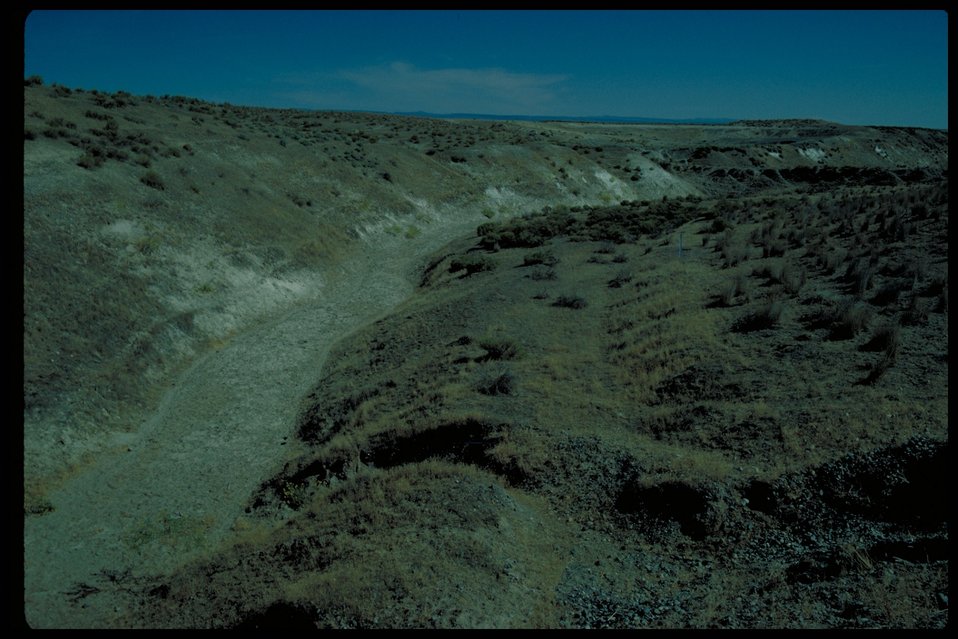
Oregon Trail Lower Snake River District